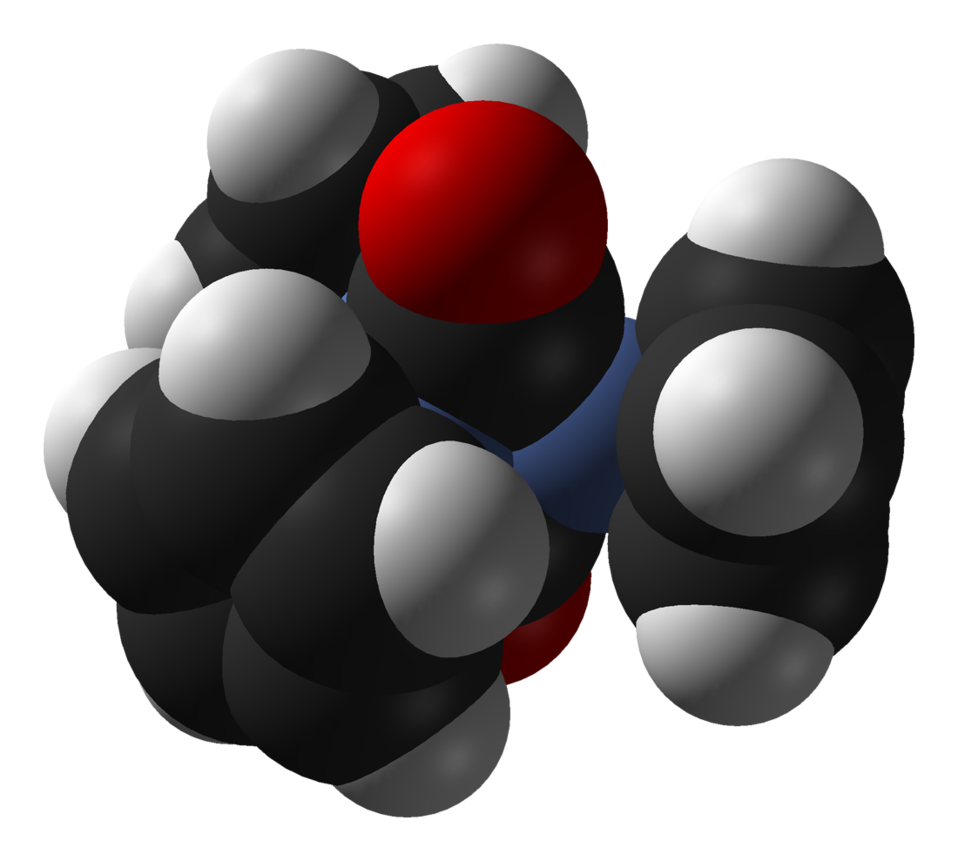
Space-filling model of the bis(μ3-carbonyl)-tris(η5-cyclopentadienyl)trinickel anion, [(CpNi)3(CO)2]−, from the crystal structure. Crystal structure by X-ray diffraction from J. Am. Chem. Soc. (1982) 104, 3054–3063. Model constructed in CrystalMaker 8.1. Image generated in Accelrys DS Visualizer.